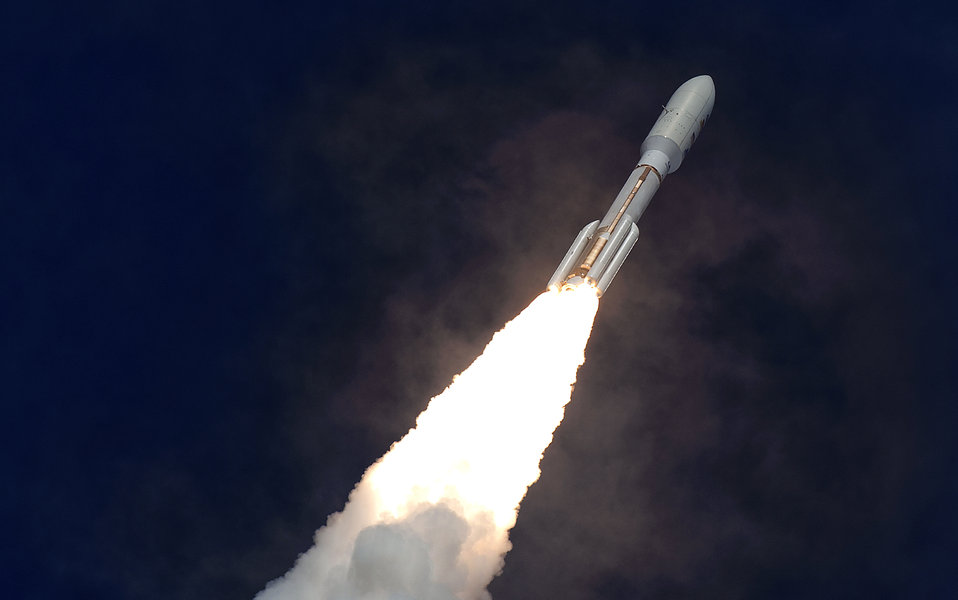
Mission to Mars

An Atlas V evolved expendable launch vehicle carrying NASA's Mars Science Laboratory launches Nov. 26, 2011, from Cape Canaveral Air Force Station, Fla. The lab's Rover Curiosity is scheduled to land on Mars in August 2012.